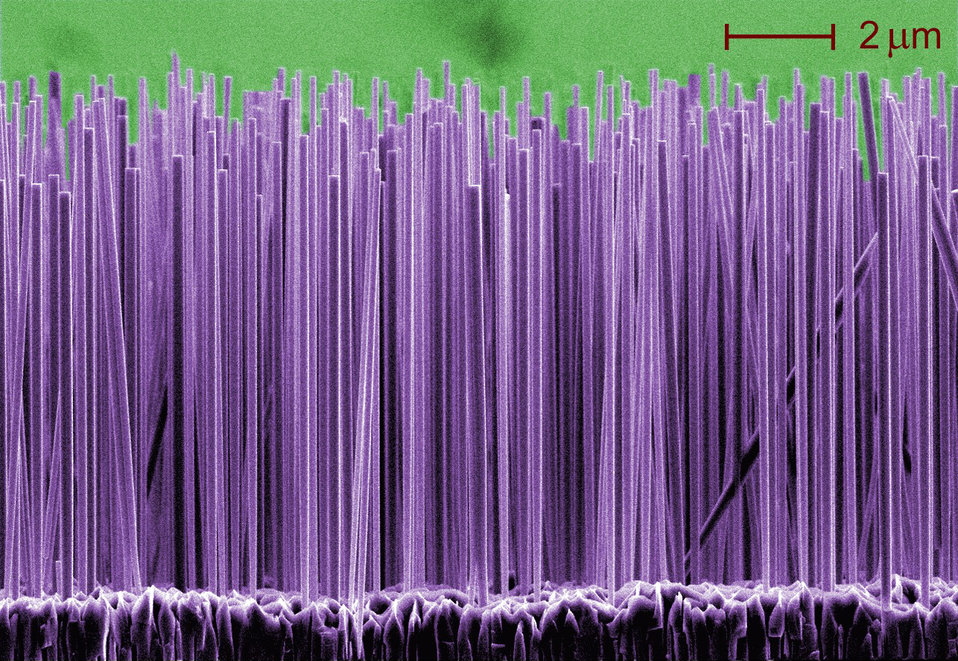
Nanowires

NIST 'grows' semiconductor nanowires that emit ultraviolet light as part of a project to make prototype nano-lasers and other devices and the measurement tools needed to characterize them. Electron micrograph shows the gallium nitride wires growing on a silicon substrate (color added for contrast).